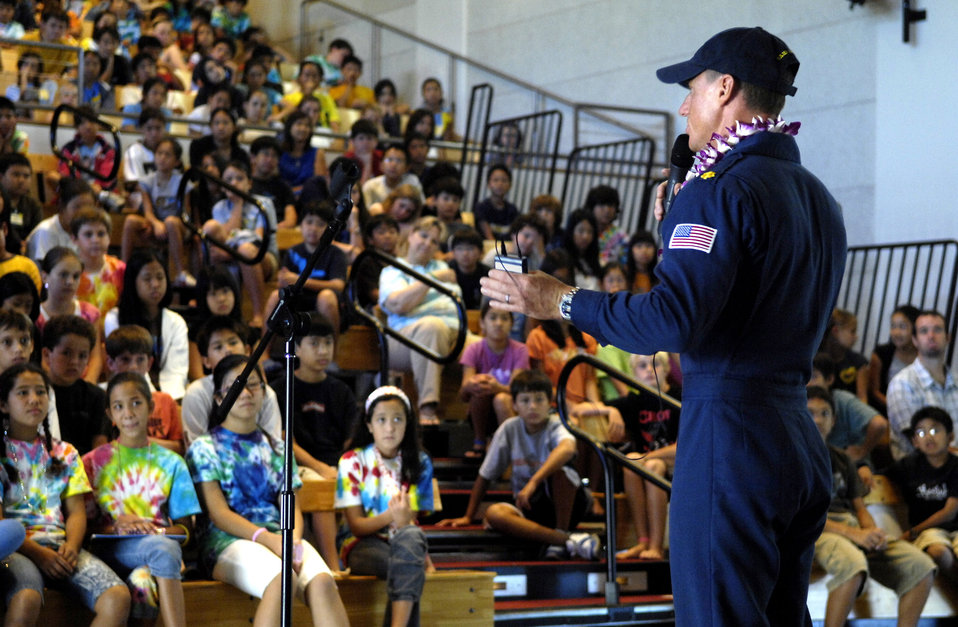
Thunderbirds visit school children during Air Force Week Honolulu

Maj. Tad Clark speaks to middle school children Sept. 14 at the Punahou School in Honolulu. Members of the Air Force Demonstration Team, the Thunderbirds, made community appearances at school in Oahu as part of Air Force Week Honolulu.